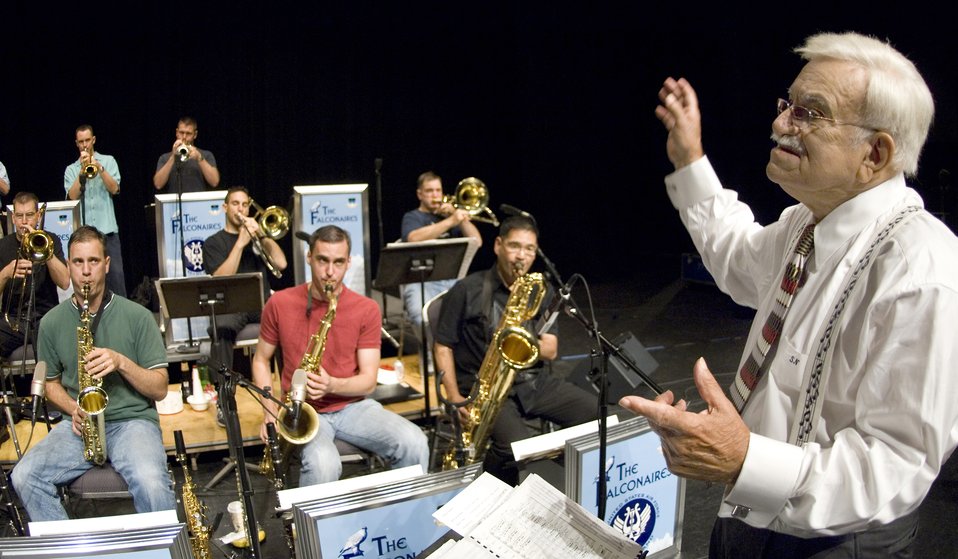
Academy band wows crowd with help from old friend

Bandmaster Sammy Nestico rehearses with The Falconaires from the U.S. Air Force Academy Band before a show at the Lila Cockrell Theatre in San Antonio on July 22.